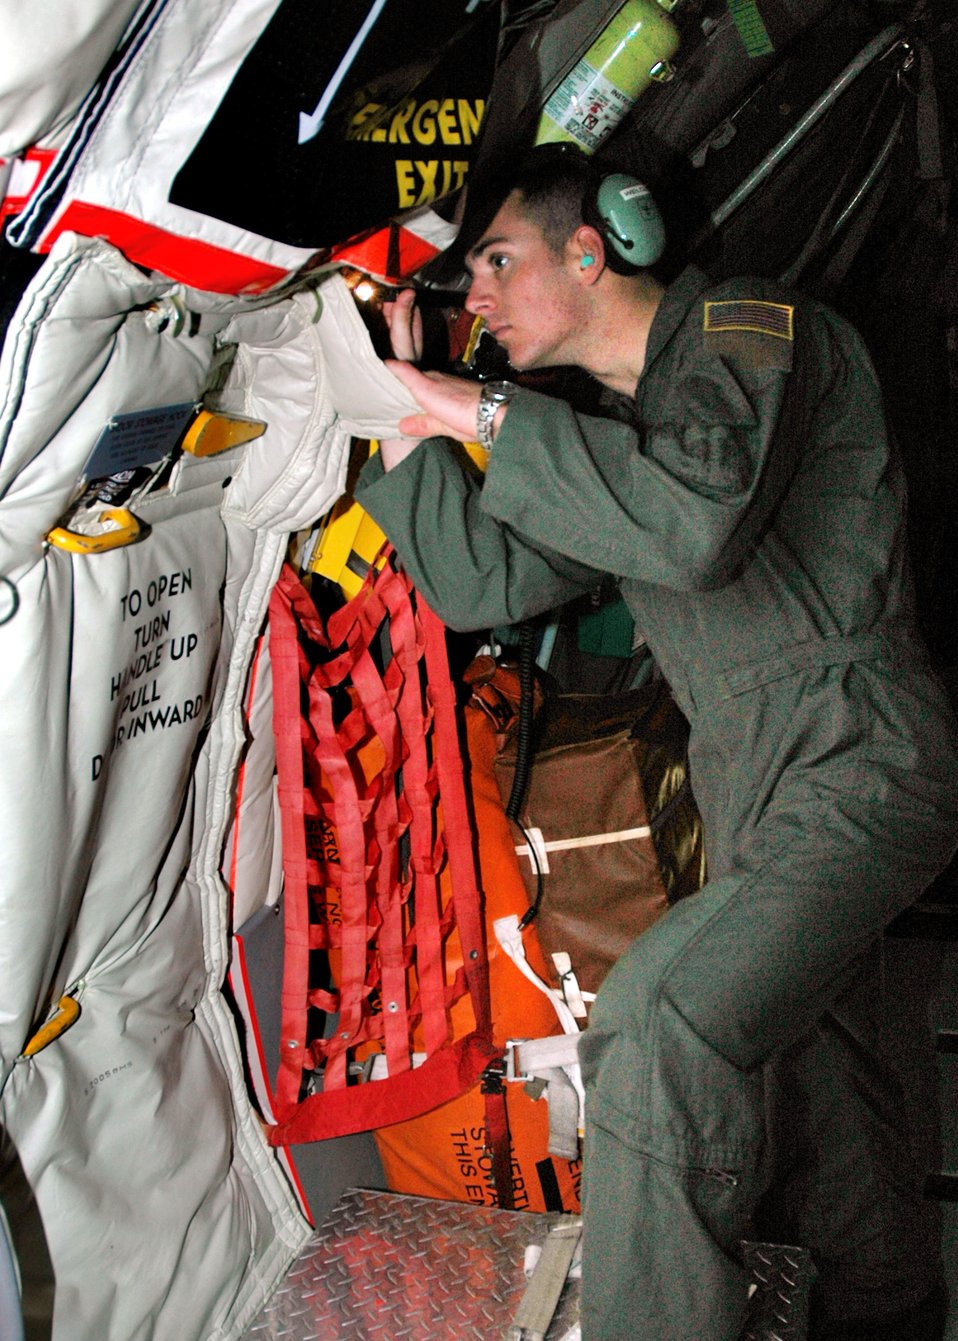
Topping off the Extender

Airman 1st Class Lance Welch inspects the interior of a KC-135 Stratotanker prior to a scheduled training mission Jan. 3 at Beale Air Force Base, Calif. Airman Welch is boom a operator with the Air Force Reserve Command's 940th Air Refueling Wing.